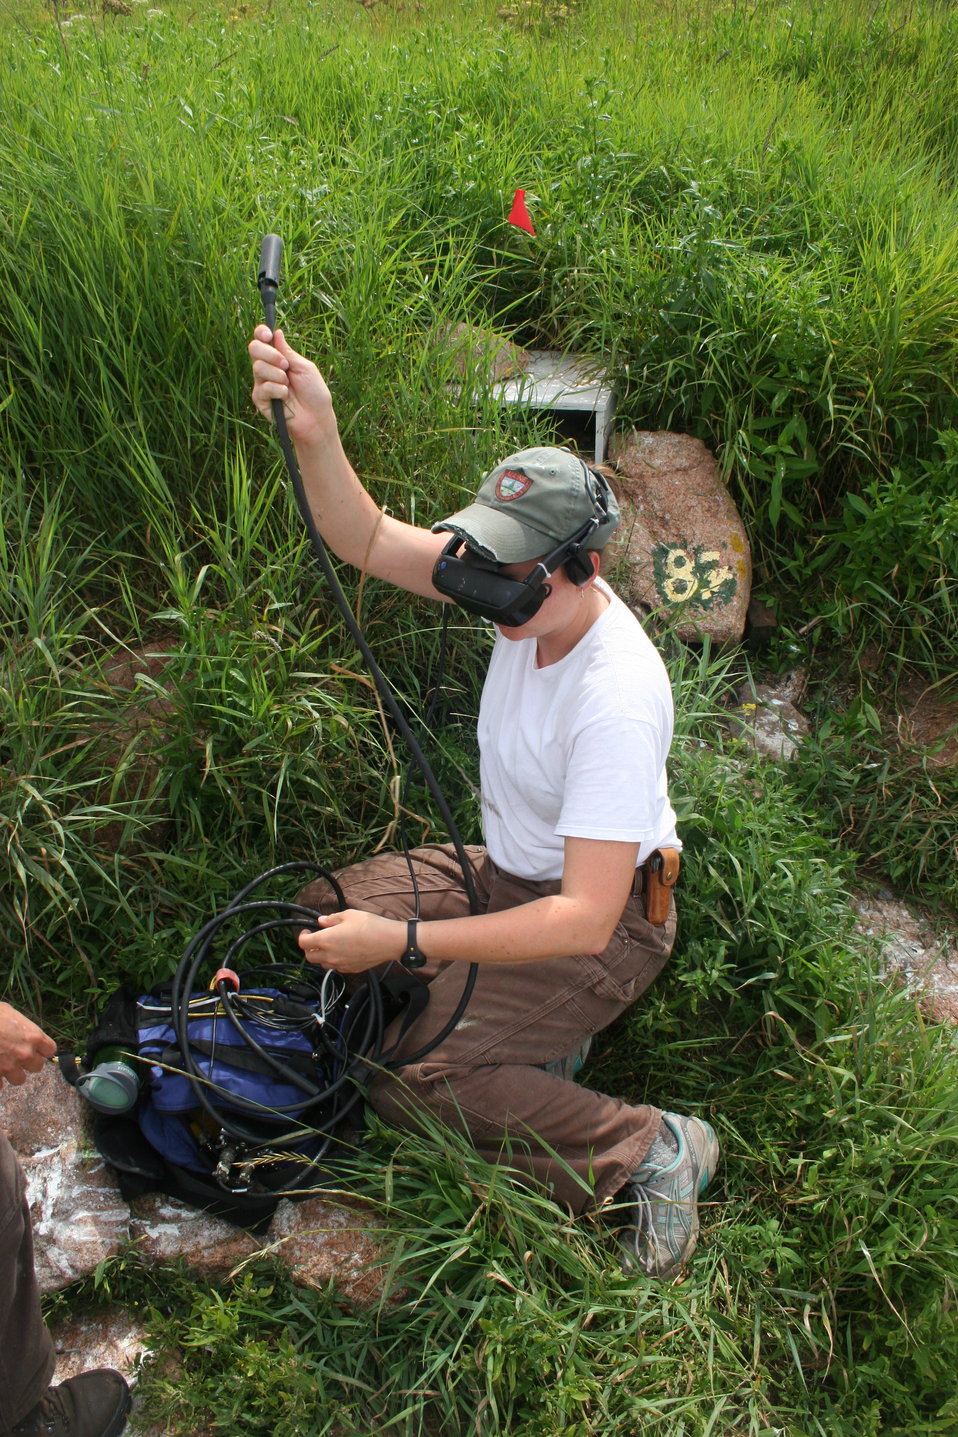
Burough Camera